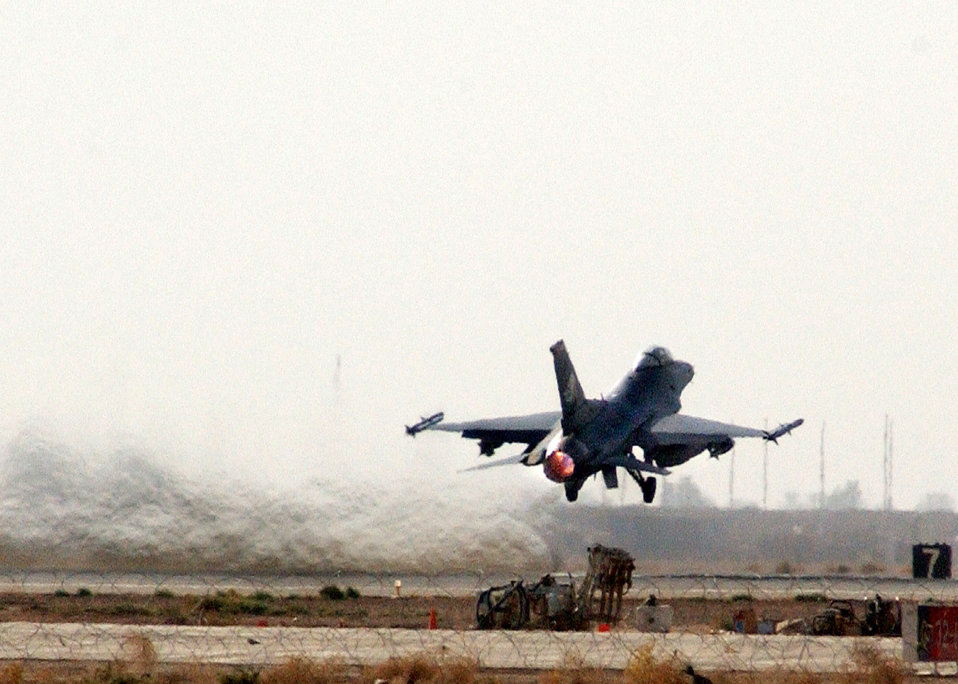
Balad F-16s destroy terrorist training camp

An F-16 Fighting Falcon takes off for a combat mission in support of Operation Iraqi Freedom July 22 at Balad Air Base, Iraq. The two F-16s are deployed from the Oklahoma Air National Guard's 138th Fighter Wing at the Tulsa International Airport. F-16s from the 332nd Air Expeditionary Wing destroyed an al-Qaida training camp southwest of Baghdad July 21.